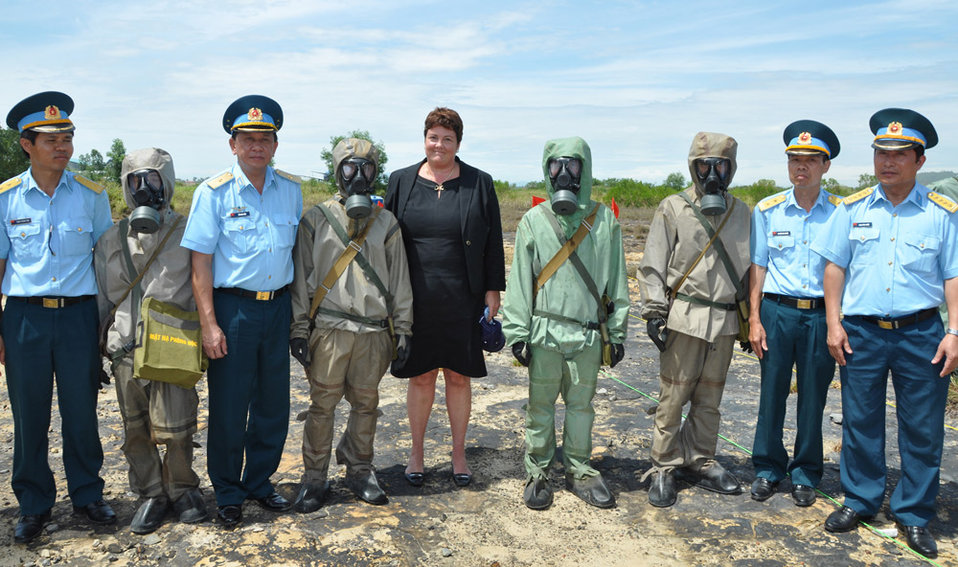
Vietnamese and U.S. officials collaborate at Danang Airport.